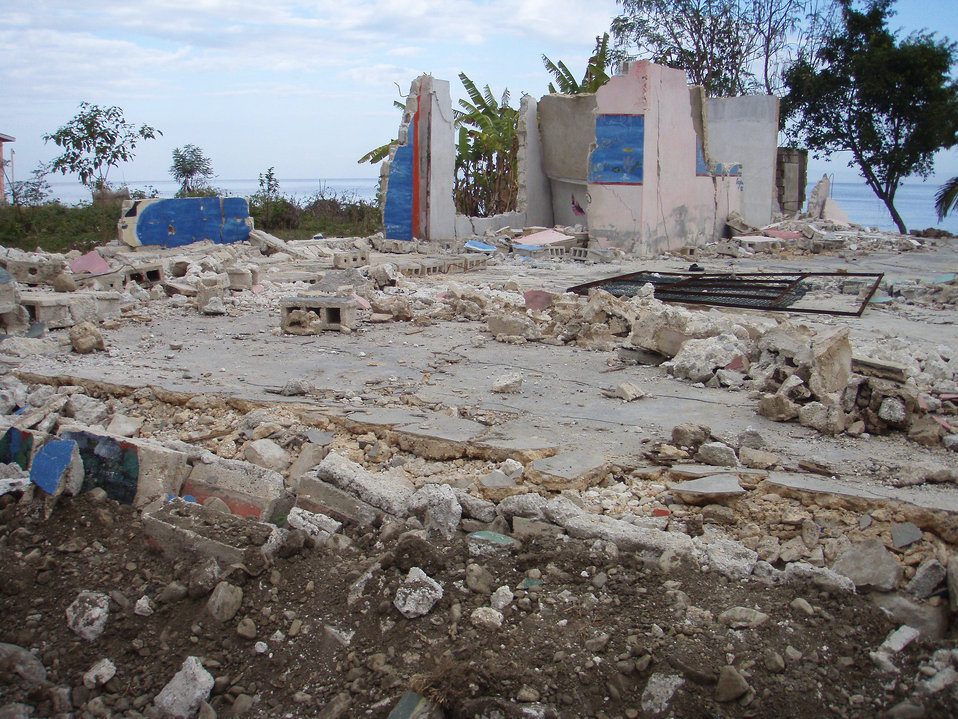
Depicted here, is some of the devastating damage inflicted upon the country of Haiti in the aftermath of the 2010 earthquake. This image was one of many captured by Lt. Cmdr. Gary Brunette, a United States Public Health Service (USPHS) officer, who'd been deployed to this Caribbean region.